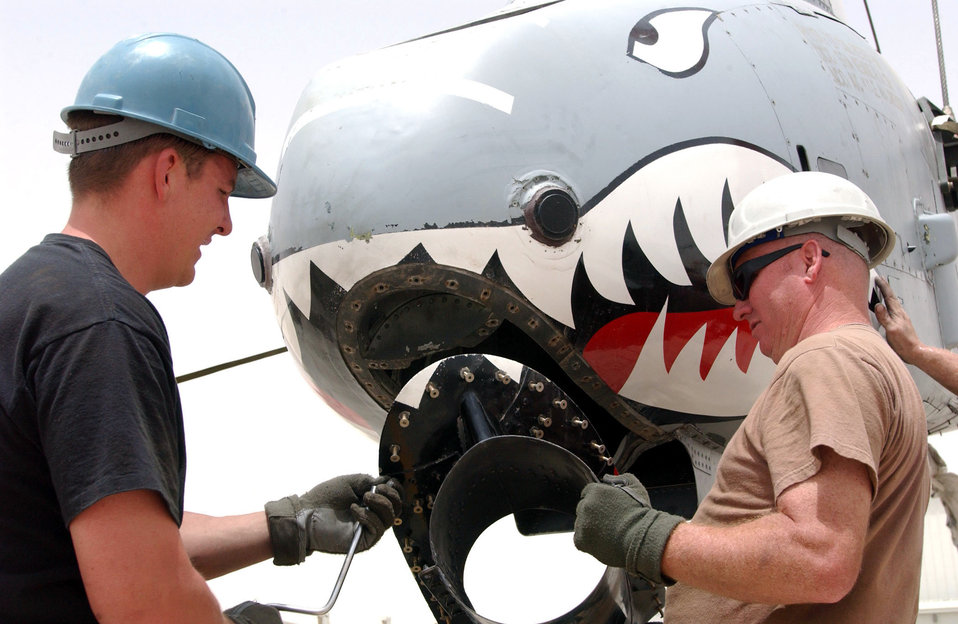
Thunderbolt repair

OPERATION IRAQI FREEDOM -- Staff Sgt. Scott Long (left) and Tech. Sgt. Jeff McElhoe remove the gun faring from the nose of an A-10 Thunderbolt II to prevent damage while it is loaded onto its shipping cradle. The aircraft received severe battle damage during a combat mission over Iraq in April and will be shipped back to the United States for repair.